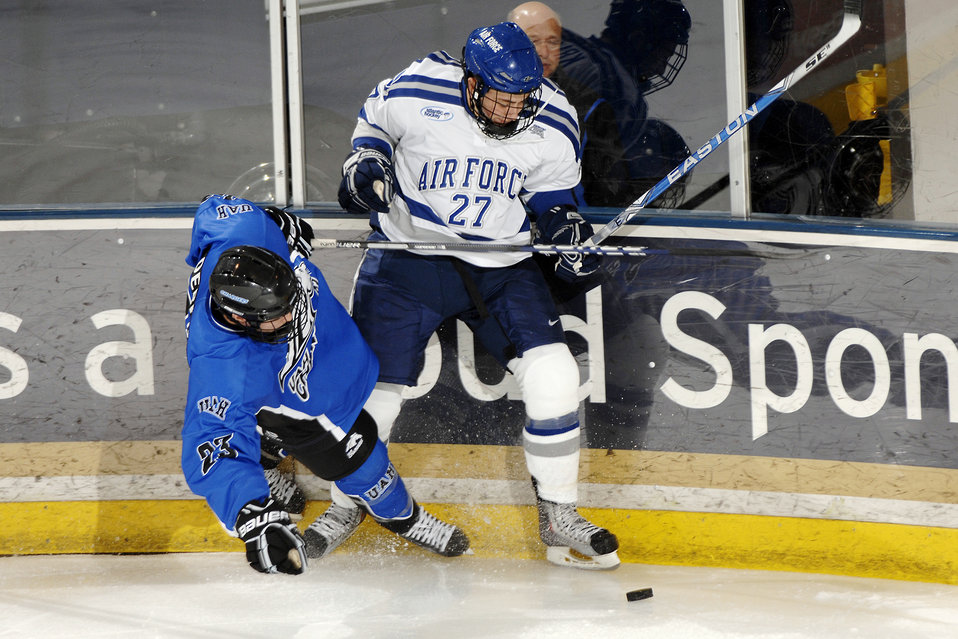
Falcons get out-Charged!

Falcon freshman John Kruse gains control of the puck against the University of Alabama-Huntsville at the U.S. Air Force Academy Cadet Ice Arena Oct. 17, 2009 near Colorado Springs, Colo. The UAH Chargers held off the Falcons for a 4-2 win. Air Force extended its school record regular-season sellout streak to 10 games as 2,534 fans watched.